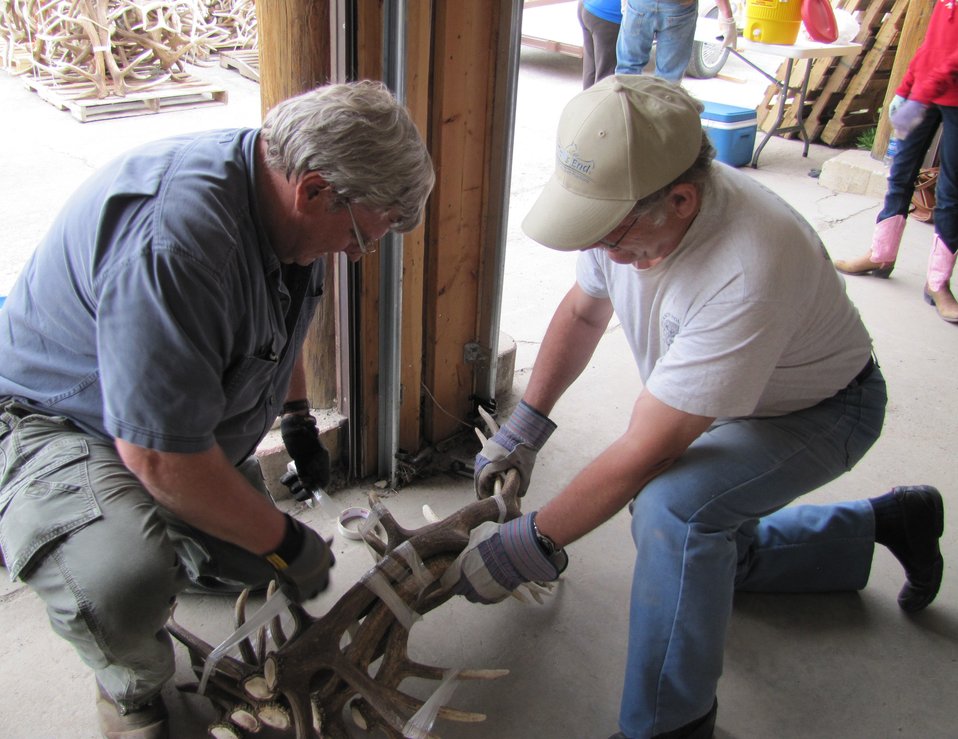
Creating Bundles of Antlers

Individual antlers are grouped into various sized bundles, then taped or tied together to create a cluster that will be sold as one auction item. Scout leaders look for antlers that have the same curvature, color, and texture with the tines coming off the main beam in roughly the same place for those buyers who will build chandeliers, lamps, or other items where similarity between the antlers is important.